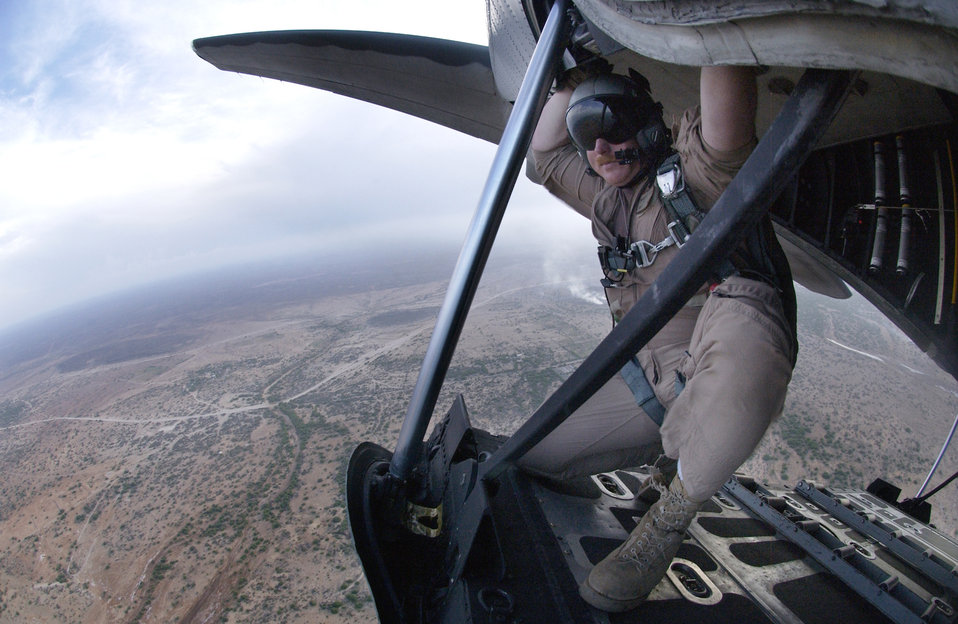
Rear view

Tech. Sgt. Josh Cowger looks out the back of a C-130 Hercules after dropping 304th Expeditionary Rescue Squadron jumpers near Camp Lemonier, Djibouti, Africa, on Thursday, May 4, 2006. Sergeant Cowger is from Valdosta, Ga.